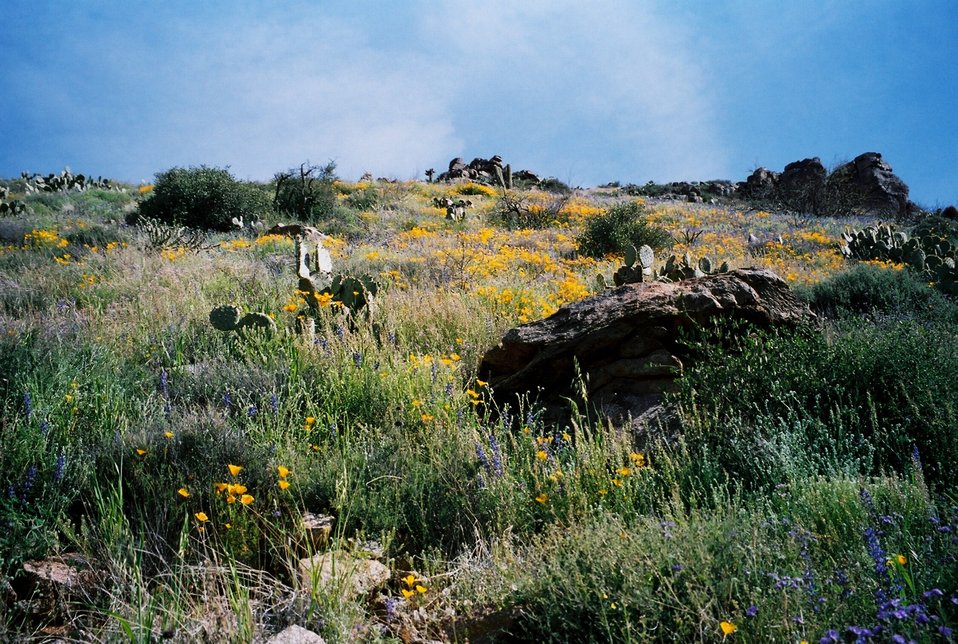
A field of Prickly Pear Cacti and wildflowers in the Agua Fria National Monument.